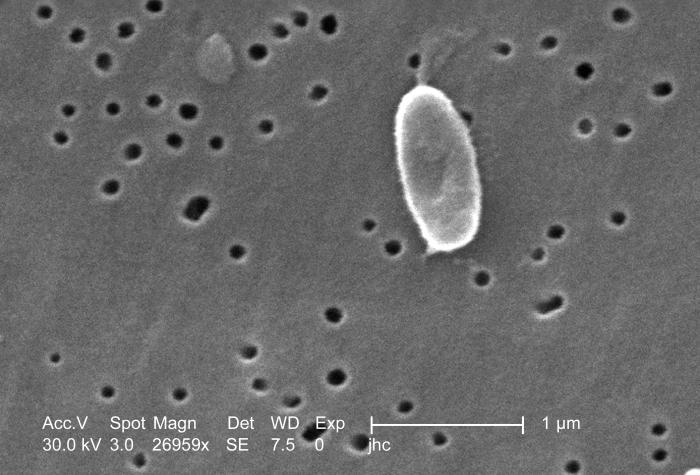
Magnified 26,959x, this scanning electron micrograph (SEM) depicted a highly enlarged view of a Ralstonia mannitolilytica bacterium, which was harvested from a pure culture.